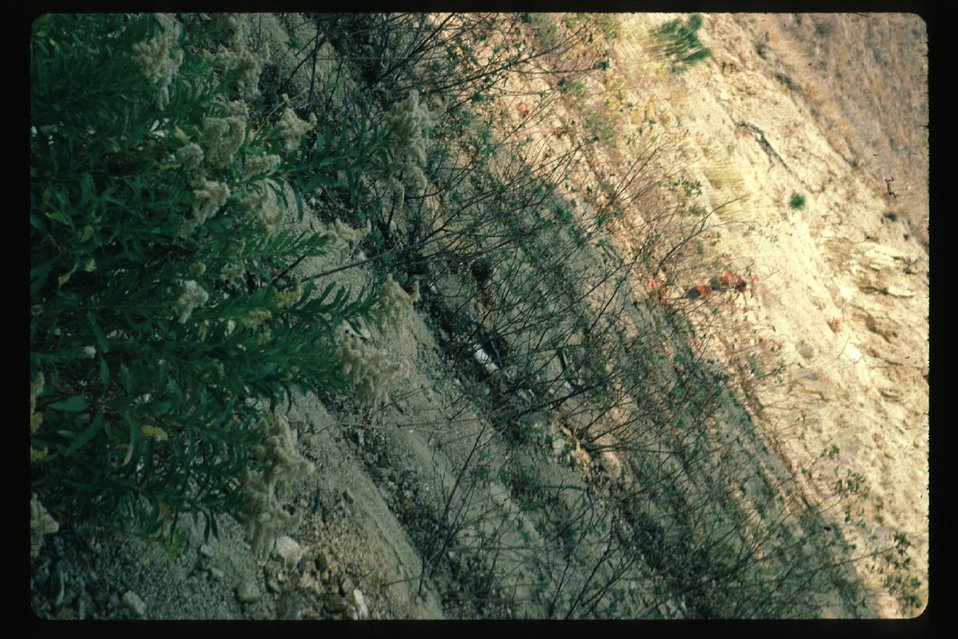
Rose Solidago Control erosion Brush, grasses Wildflowers